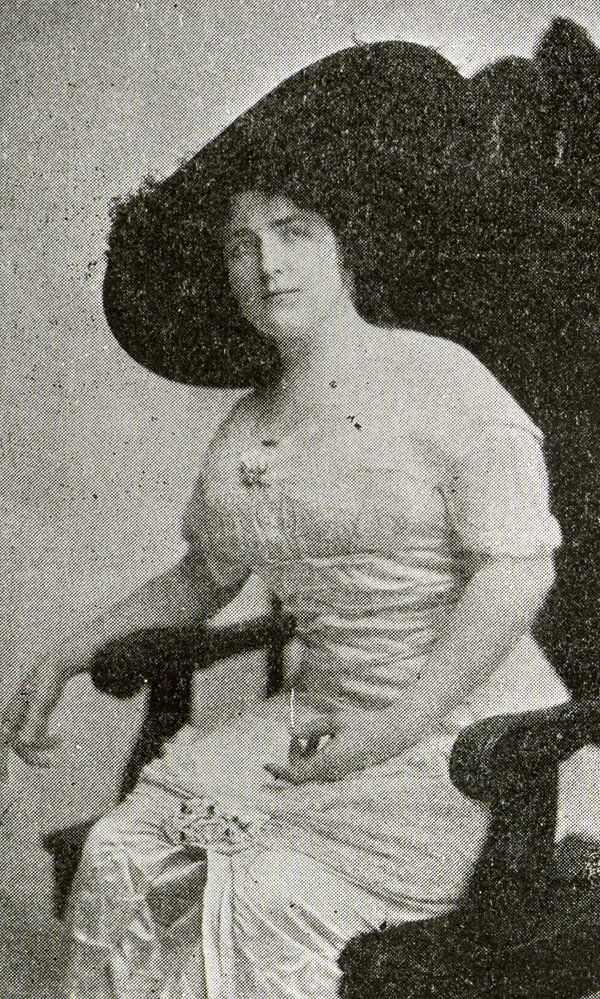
Belle Kinney Scholz (1890-1959) - Women Artists

Sculptor, Bronze statue of Andrew Jackson and John Sevier of Tennessee for the National Statuary Hall Collection.